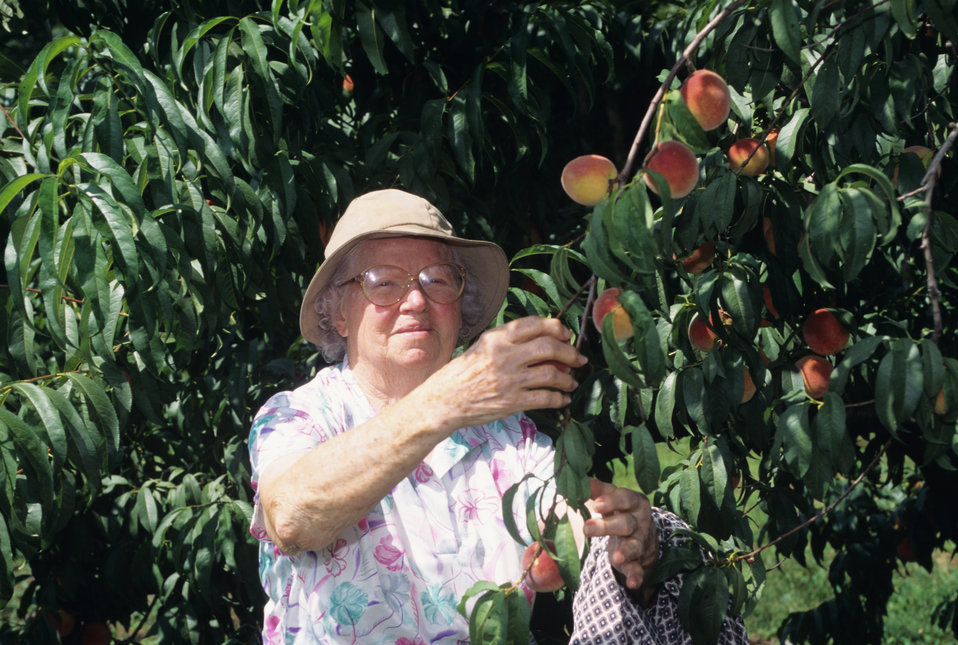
A senior citiazen picks peaches at the William Manor Peach Orchard in Morrisville, VA in mid August 1995.